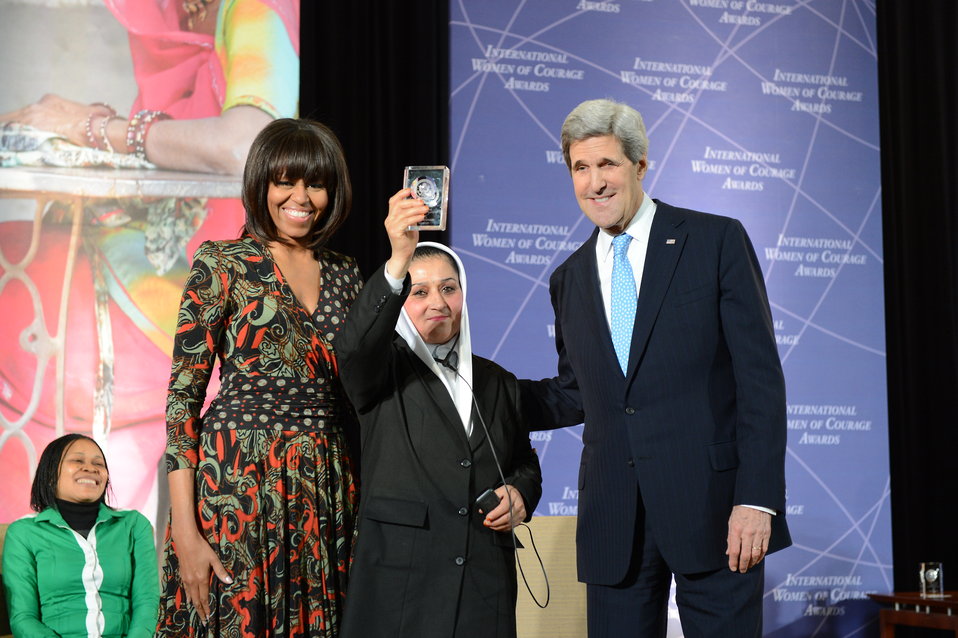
Secretary Kerry and First Lady Michelle Obama Recognize 2nd Lt. Malalai Bahaduri of Afghanistan as a 2013 International Women of Courage Award Winner

First Lady Michelle Obama, left, and U.S. Secretary of State John Kerry, right, recognize Second Lieutenant Malalai Bahaduri of Afghanistan as a 2013 International Women of Courage Award Winner at the U.S. Department of State in Washington, D.C., on March 8, 2013.